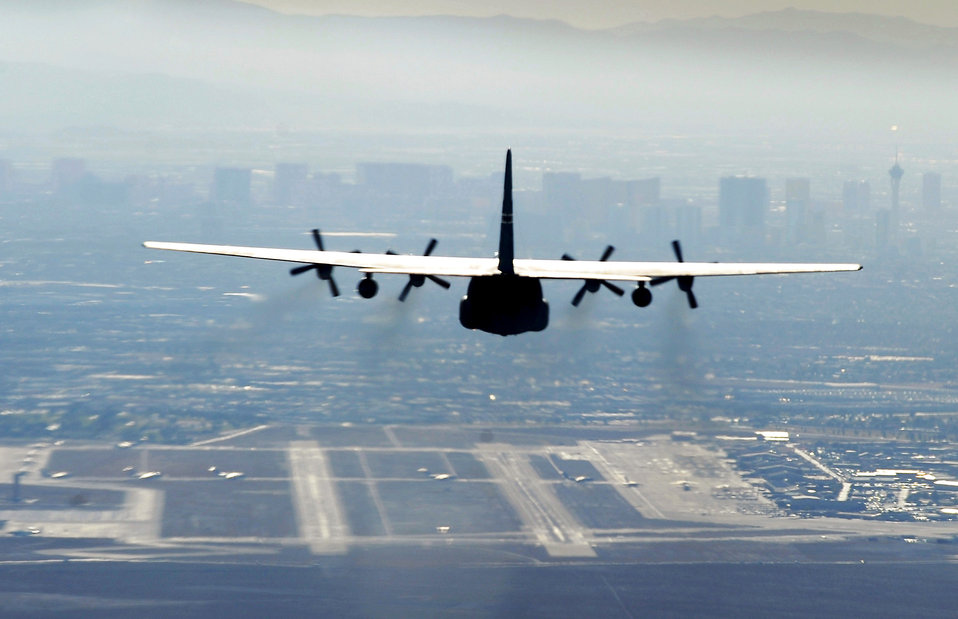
Mobility Air Forces Exercise

A C-130 Hercules approaches the runway at Nellis Air Force Base, Nev., after completing a Mobility Air Forces Exercise mission Nov. 17, 2010, over the Nevada Test and Training Range. The exercise brought more than 40 C-17 Globemaster IIIs and C-130 Hercules to conduct air and ground operations.